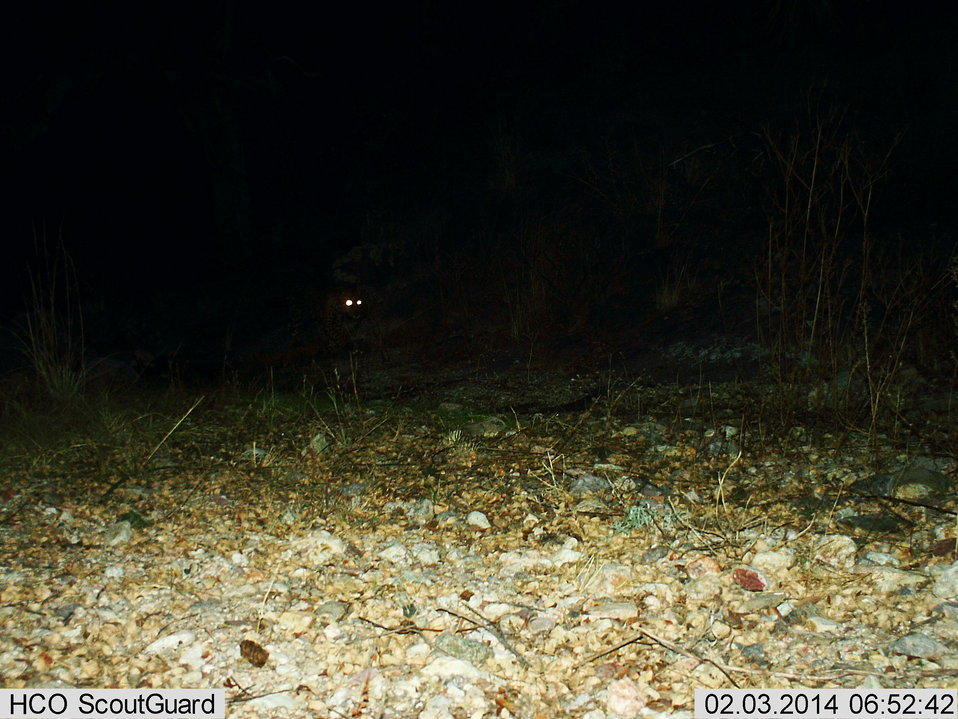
Male Jaguar

UA Jaguar 2014-02-3 (06.52).jpg] Male jaguar photographed by automatic wildlife cameras in the Santa Rita Mountains on February 3, 2014, as part of a U.S. Fish and Wildlife Service/Department of Homeland Security-funded jaguar survey conducted by University of Arizona. The jaguar has been photographed previously at this location.